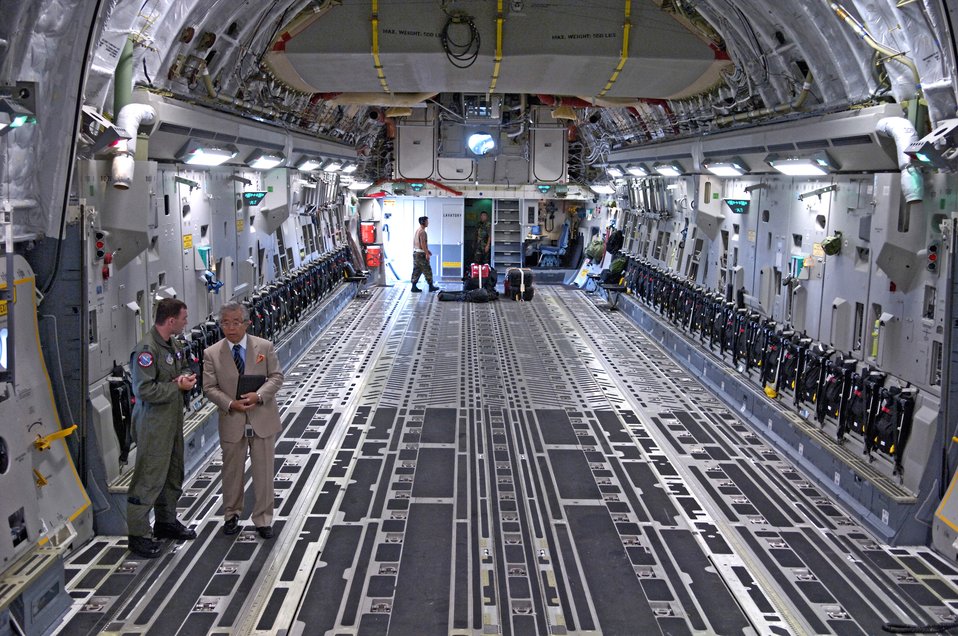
Air show to showcase C-17's capabilities

Capt. Corey Reed highlights the capabilities of the C-17 Globemaster III to Yoshiki Hidaka Sept. 27 at Hickam Air Force Base, Hawaii. Captain Reed is a pilot with 535th Airlift Squadron. Mr. Hidaka is the executive producer for